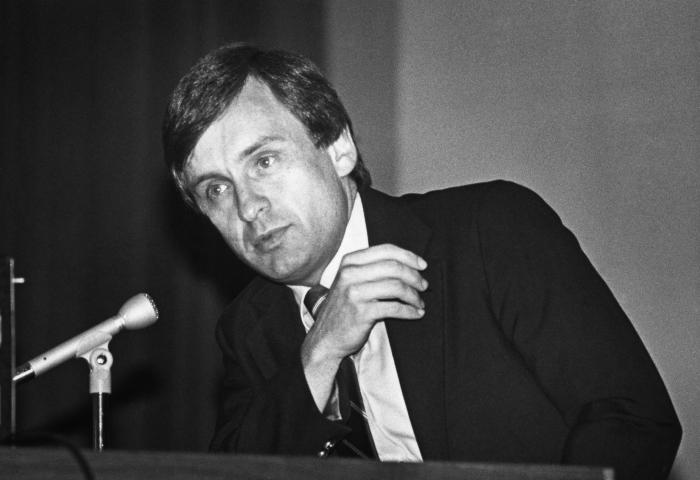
This 1986 photograph showed James W. Curran, M.D., M.P.H., formerly, the Centers for Disease Control's Director of the Acquired Immunodeficiency Syndrome (AIDS) Activity task force, in the Division of HIV/AIDS, National Center for Infectious Diseases.